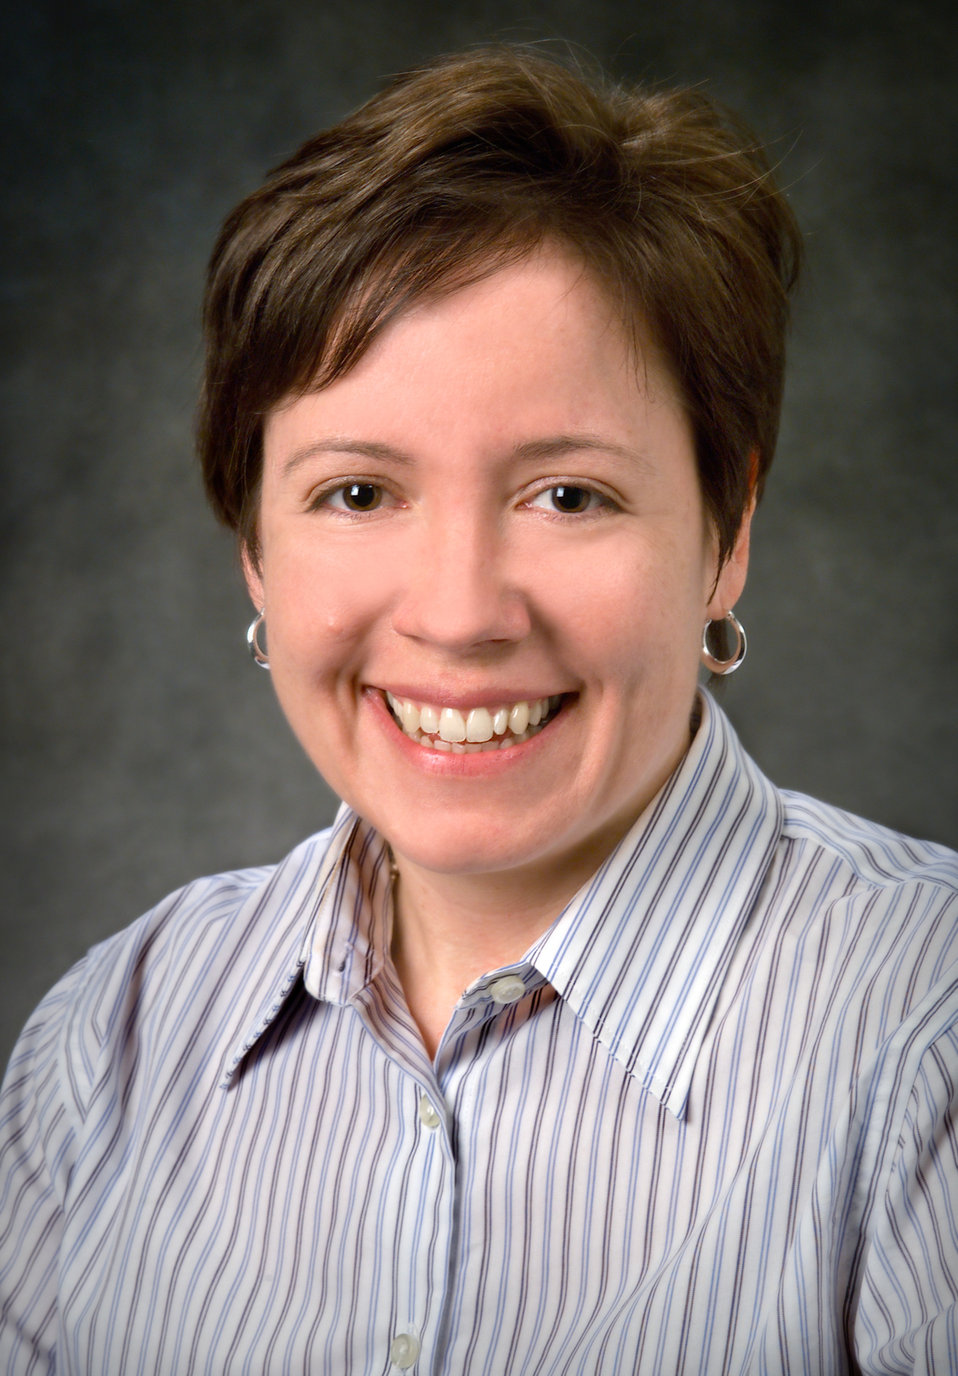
This is Jean B. Patel, Ph.D., A.B.M.M., the Chief of the Anti-Infectives Investigation Section of the Epidemiology & Laboratory Branch of the Division of Healthcare Quality Promotion (DHQP) at the Centers for Disease Control and Prevention, CDC, in Atlanta Georgia.